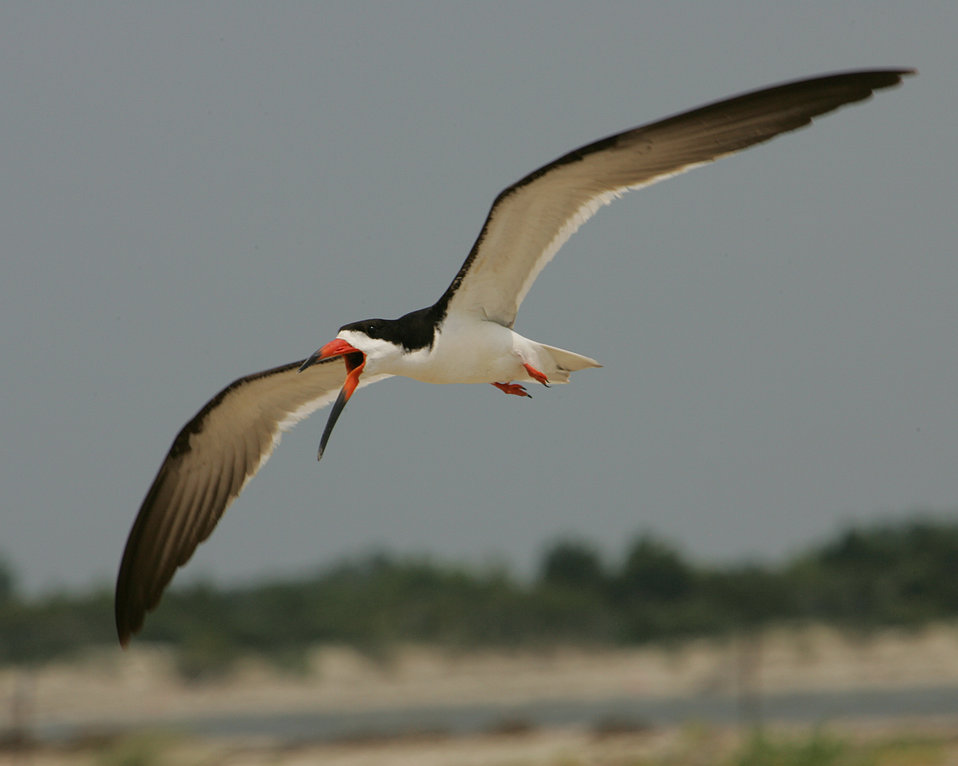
Black skimmer in flight.